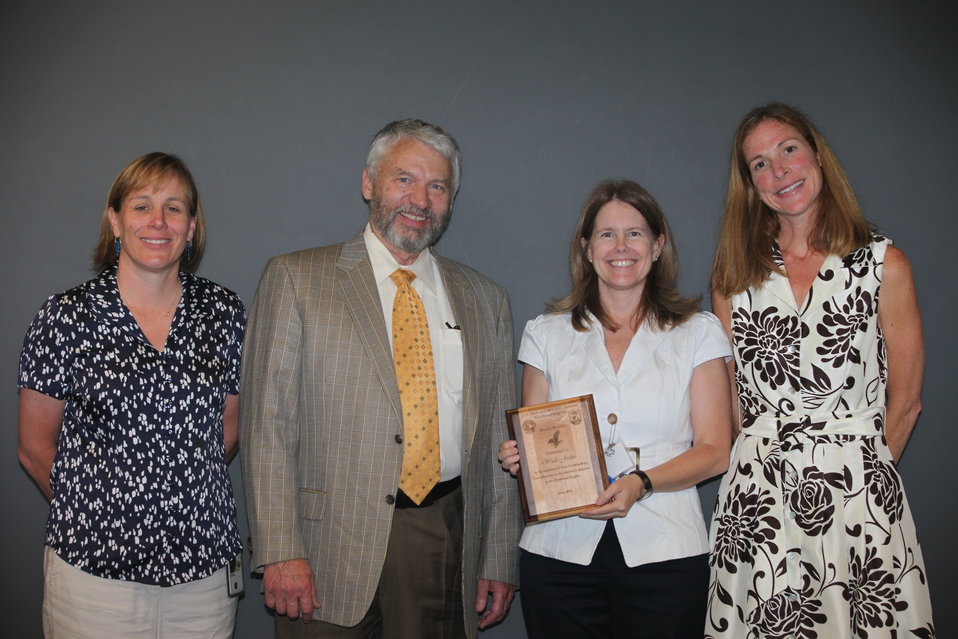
Susan Lingenfelser of the Virginia Feild Office recieved the Eagle Award.
From left to right: Deputy Regional Director Deb Rocque, Deputy Director Rowan Gould, Susan Lingenfelser, and Regional Director Wendi Weber